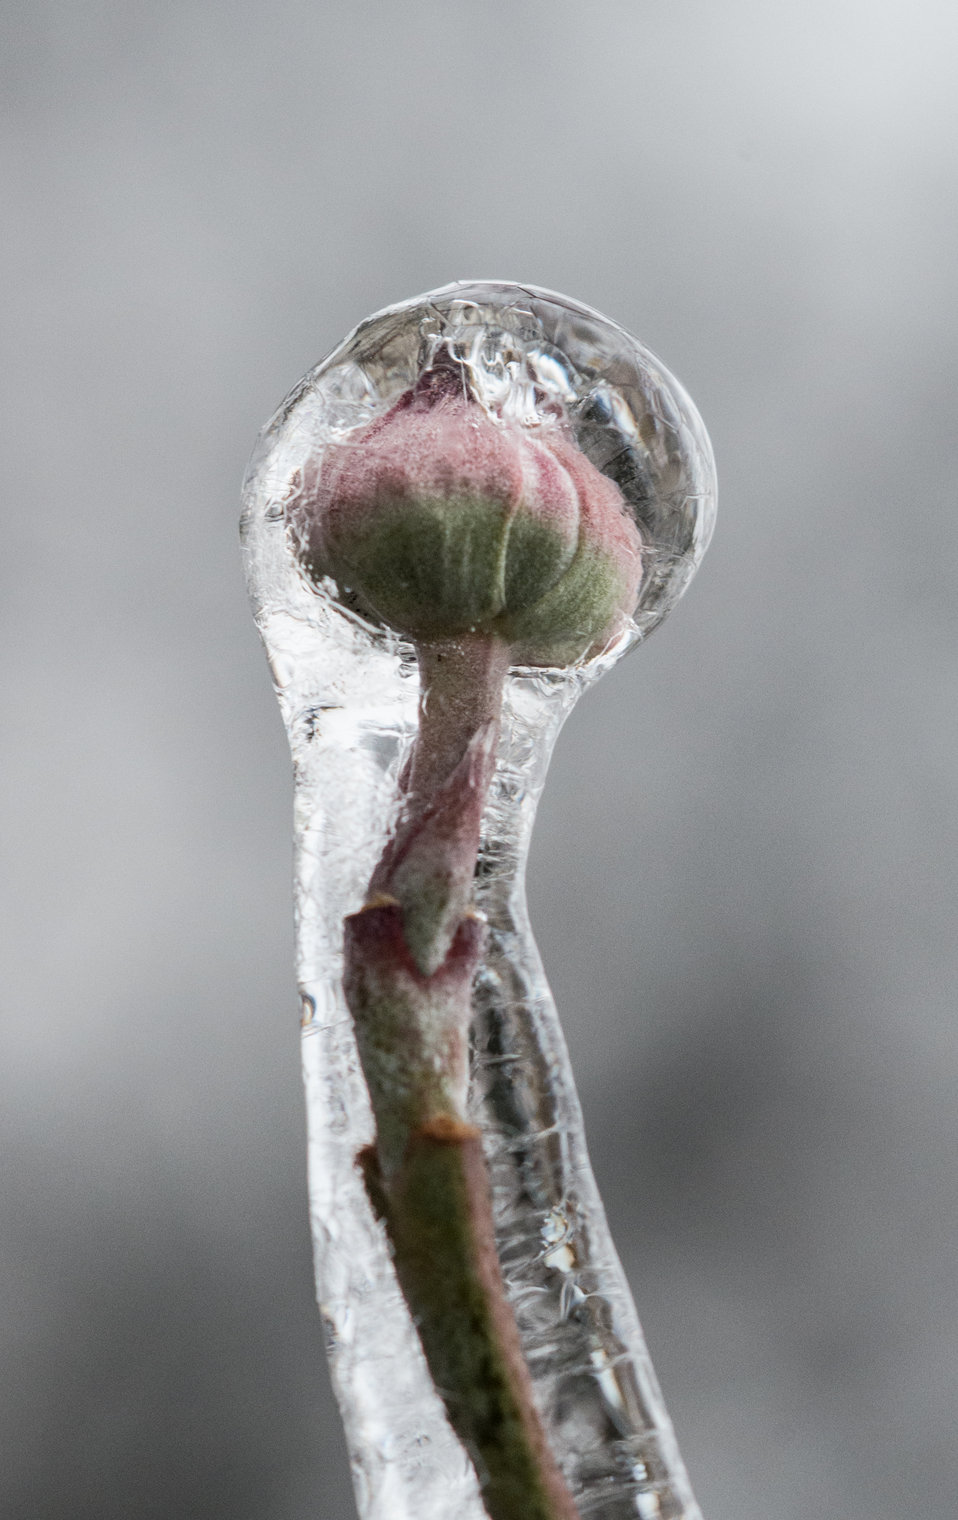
Freezing rain coveresplants and trees in Falls Church, VA on Monday, Dec. 9, 2013.